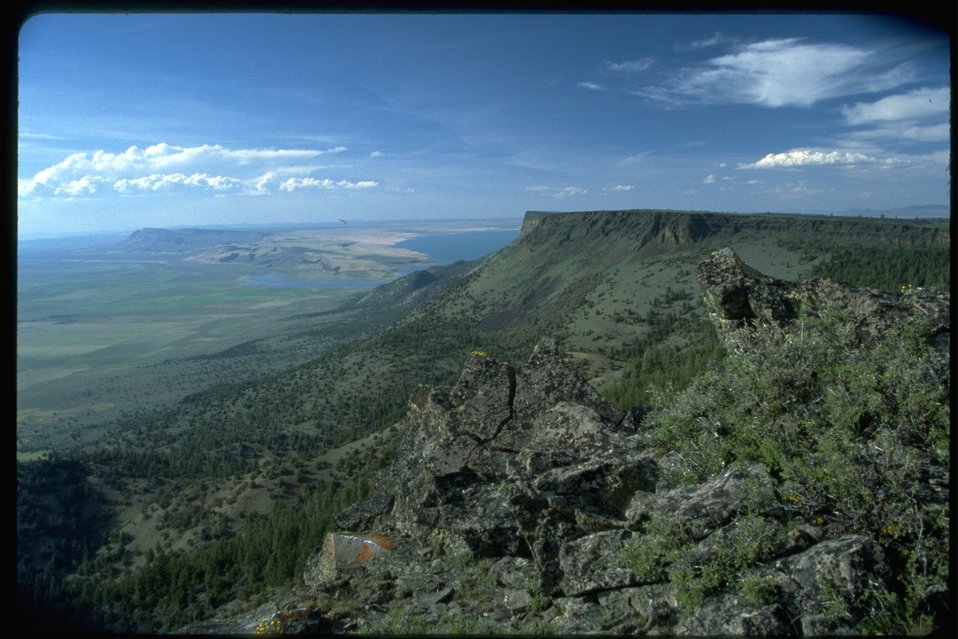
Abert Rim, view from Forest Service Hang Glider Site.